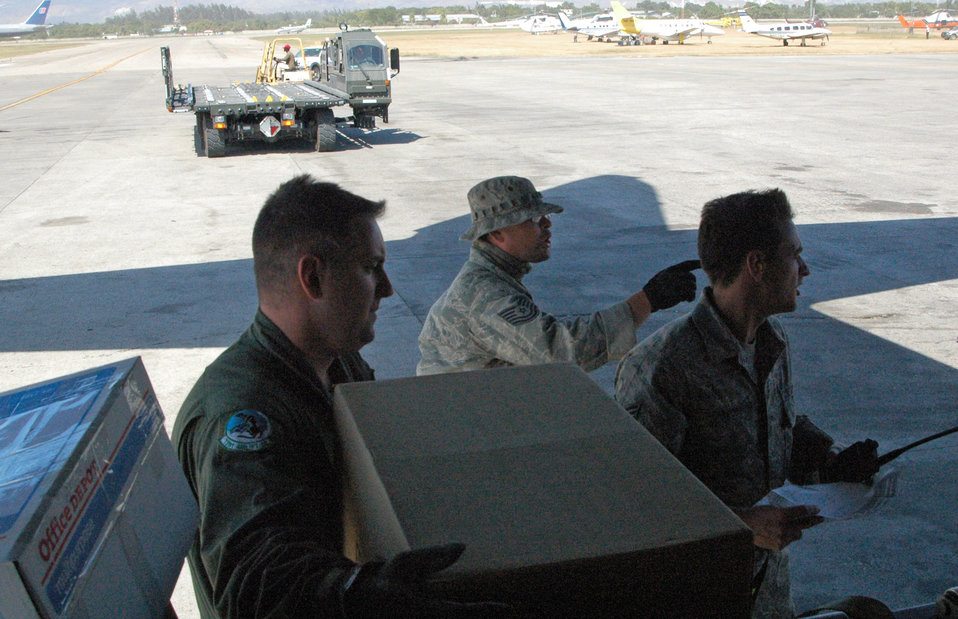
Airmen continue relief aid flights into Haiti

Tech. Sgt. Barry Burkitt hands packages to awaiting aerial transporters Jan. 30, 2010, at Port-au-Prince, Haiti. The packages were loaded onto a C-130 Hercules at Homestead Air Reserve Base, Fla., and transported to the earthquake-devastated island nation as part of ongoing relief efforts. The C-130 is operated by the 302nd Airlift Wing, one of two wings assigned to the 35th Expeditionary Airlift Squadron, which supports Air Expeditionary Force Coronet Oak. The members are deployed in support of Haiti earthquake relief operations, some of which are based at Muniz Air Base, Puerto Rico.